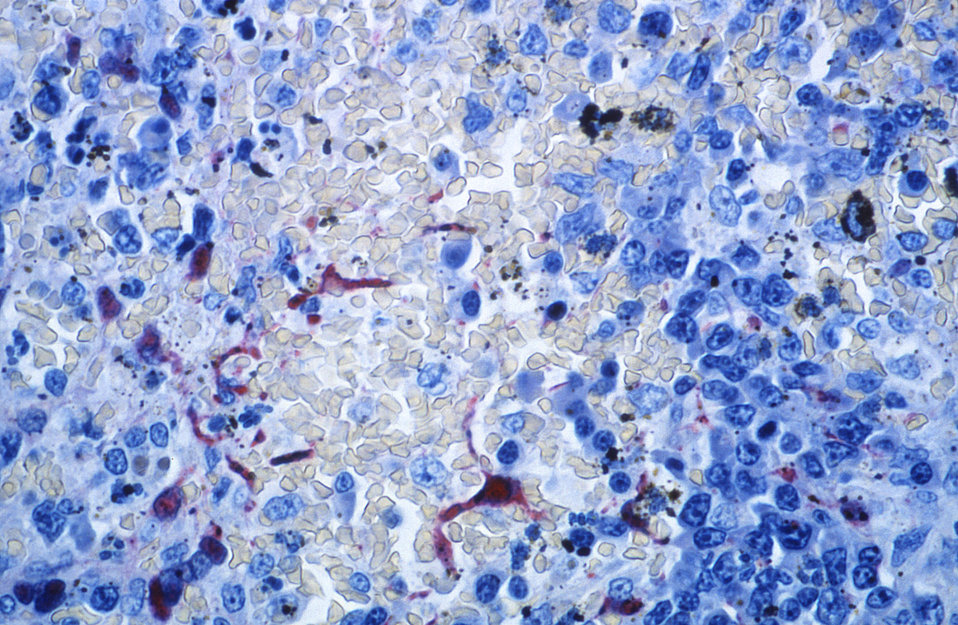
Using immunohistochemical (IHC) technique, this photomicrograph of a canine splenic tissue specimen, revealed some of the cytoarchitectural histopathologic changes associated with a Nipah virus infection.